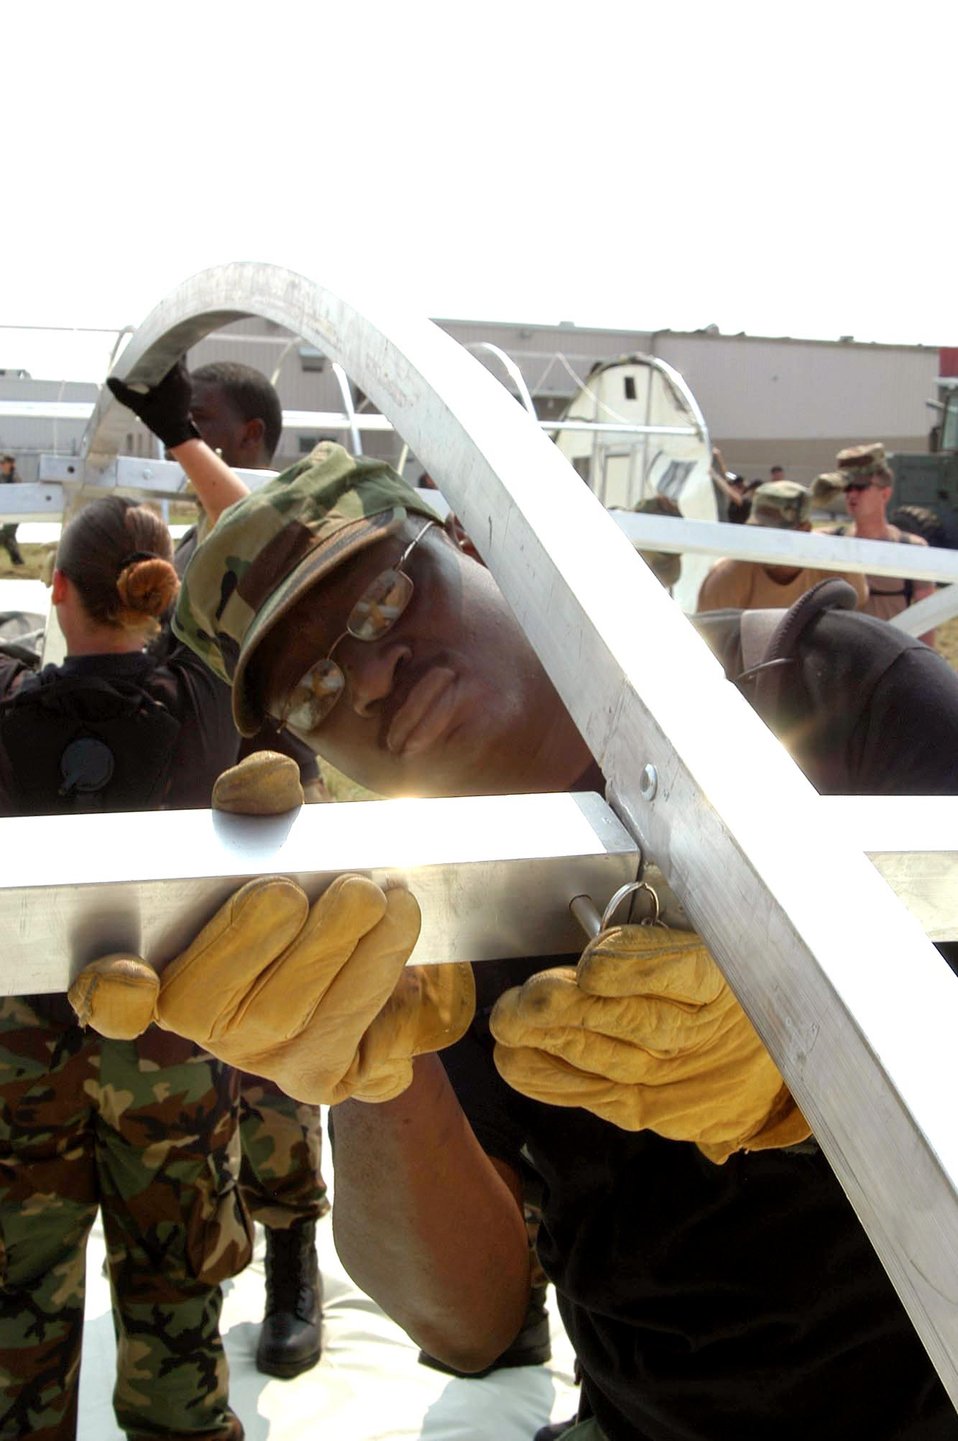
Hurricane relief

LOUIS ARMSTRONG NEW ORLEANS INTERNATIONAL AIRPORT, La. -- Master Sgt. Rod Harris secures a pin in an Alaskan shelter here Sept. 5. More than 30 shelters have been built up to support additional Airmen coming here to help support the Hurricane Katrina relief and rebuilding efforts in New Orleans. Sergeant Harris is the loading superintendent of the 55th Services Squadron from Offutt Air Force Base, Neb.